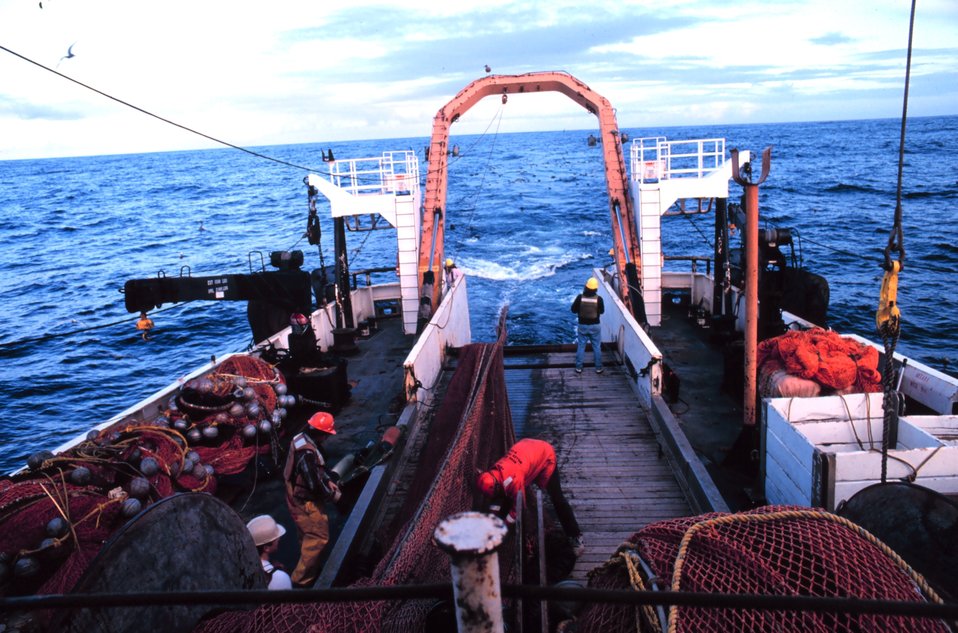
Trawling operations on the MILLER FREEMAN - hauling back the net.